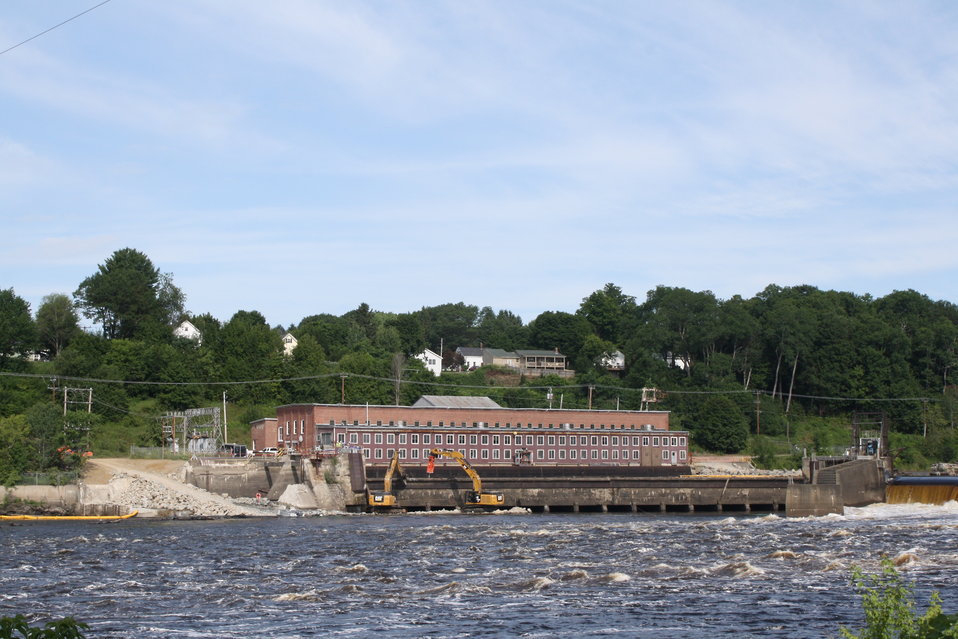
Veazie Dam Removal

Various angles of the excavators prepping for the breaching.